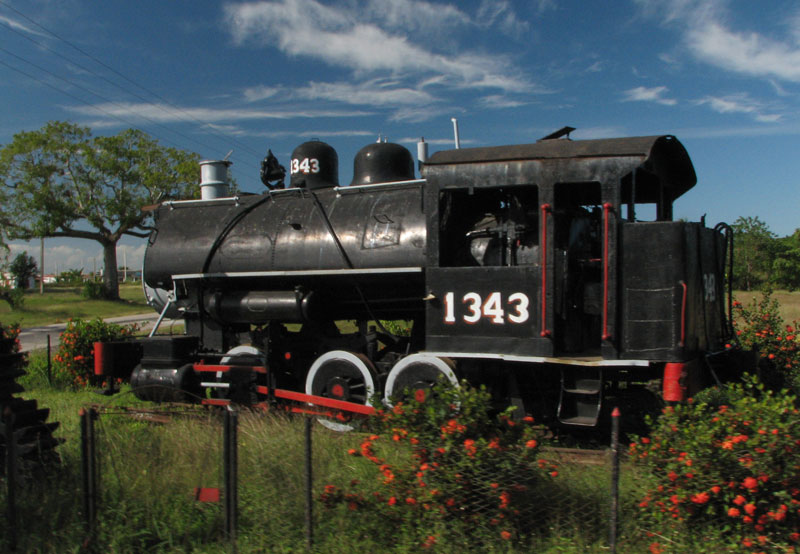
my photos